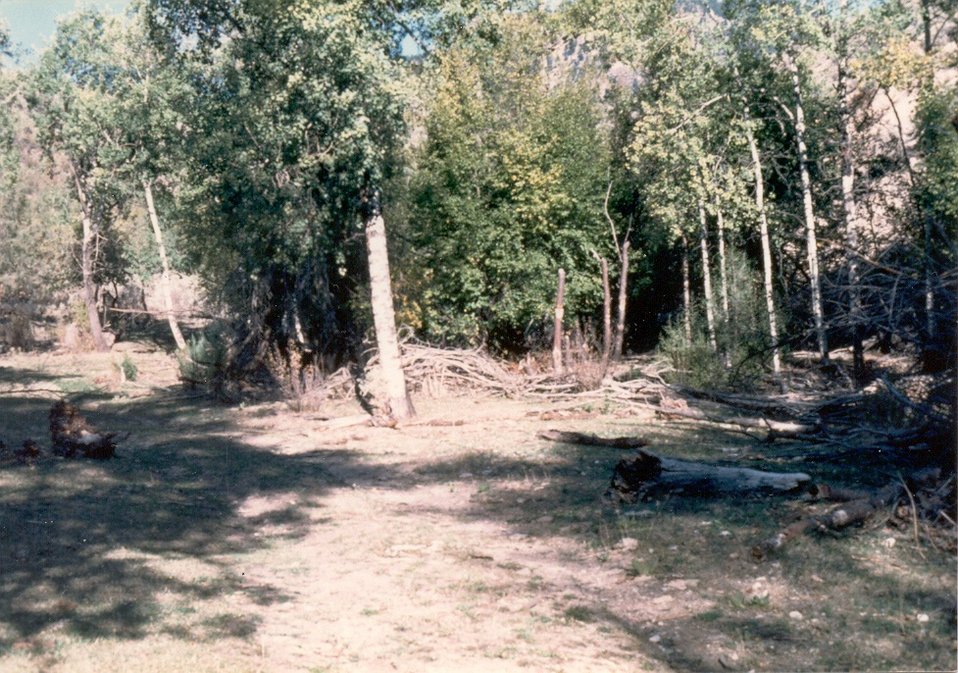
Roads Recreation Erosion Salmon Field Office UCSC Upper Columbia Salmon Clearwater District